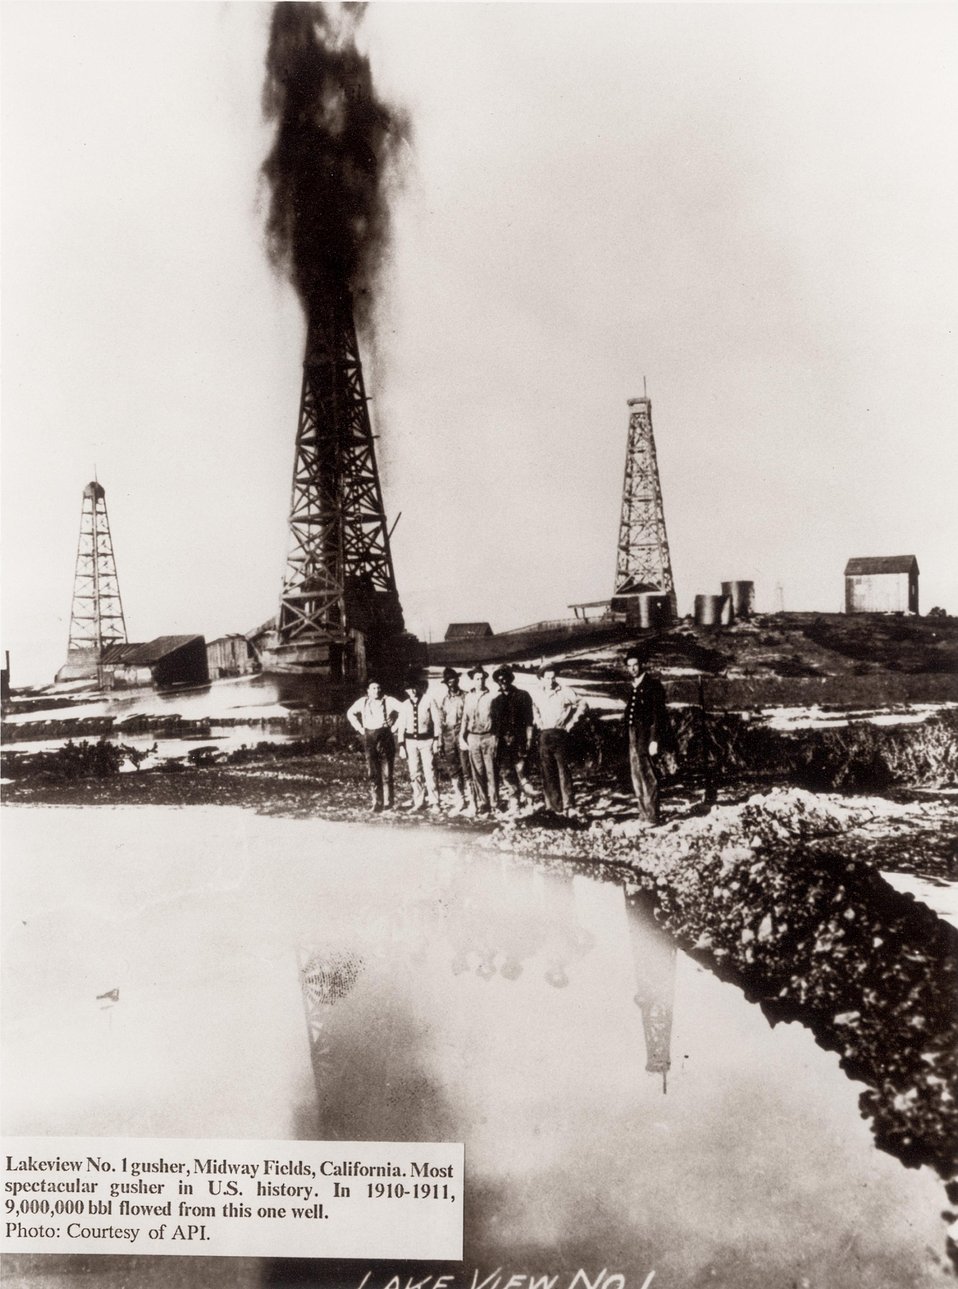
Lakeview No. 1 gusher, Midway CA.